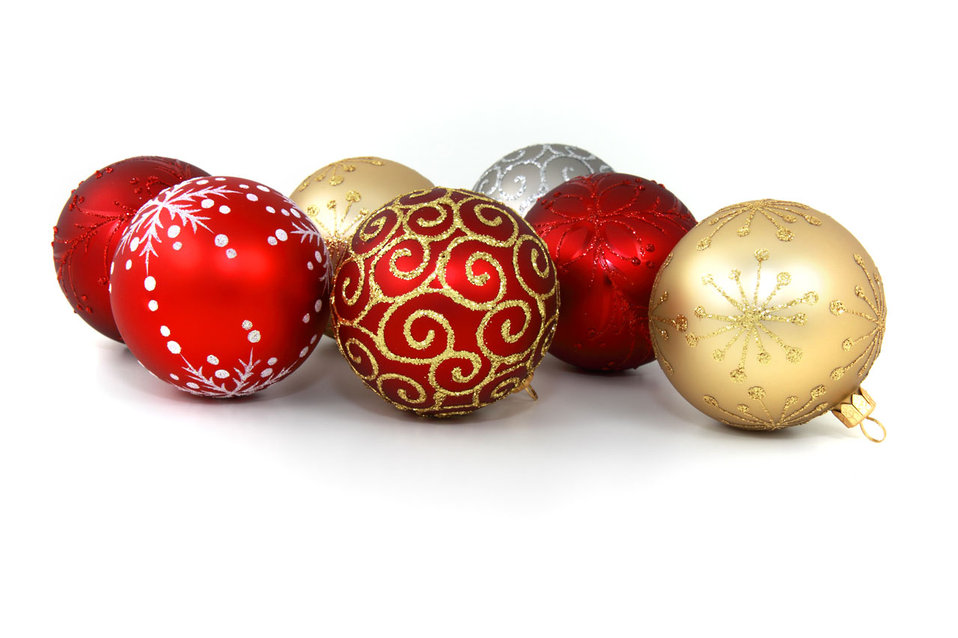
Christmas baubles

Various christmas baubles on white background.